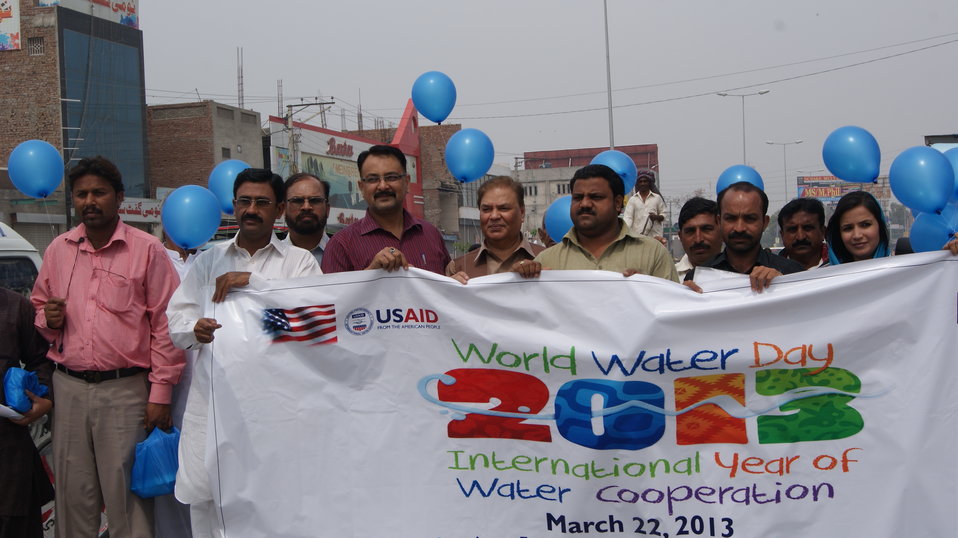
Caption 3 - AwazCDS - Multan - World Water Day 2013